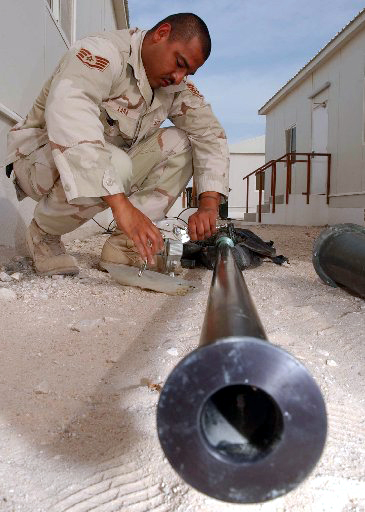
Ready for radio

SOUTHWEST ASIA - Staff Sgt. Juan Lara prepares an antenna bracket for installation on the new operations group building at a forward-deployed location Dec. 28. Sergeant Lara is a ground radio technician assigned to the 379th Expeditionary Communications Squadron.